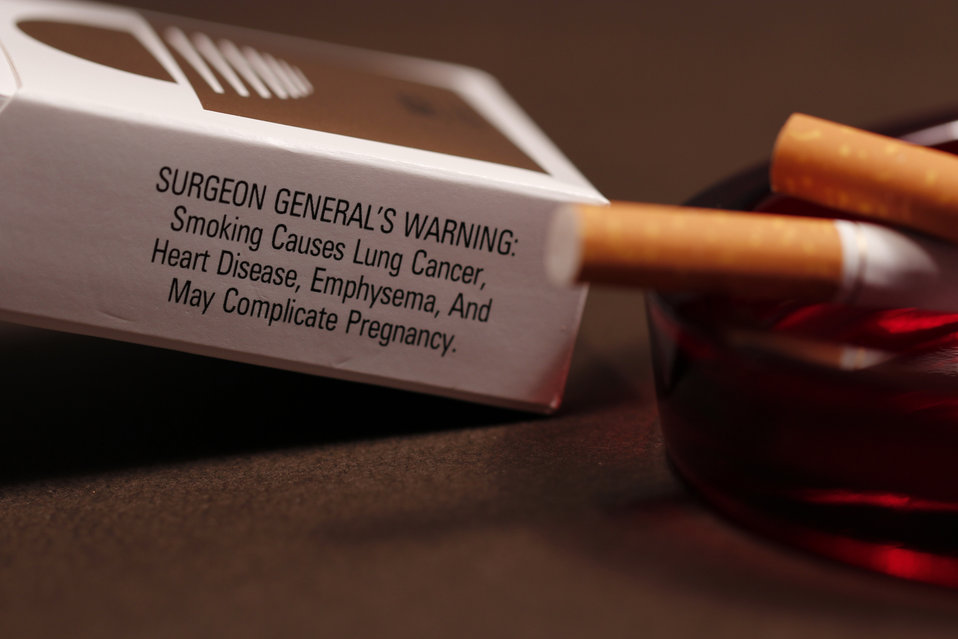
In its background, this image depicts an opened pack of cigarettes with its side-panel health warning to would-be smokers stating some of the ill effects attributed to smoking, and in the foreground, a ruby-colored glass ashtray containing the butts of two cigarettes.